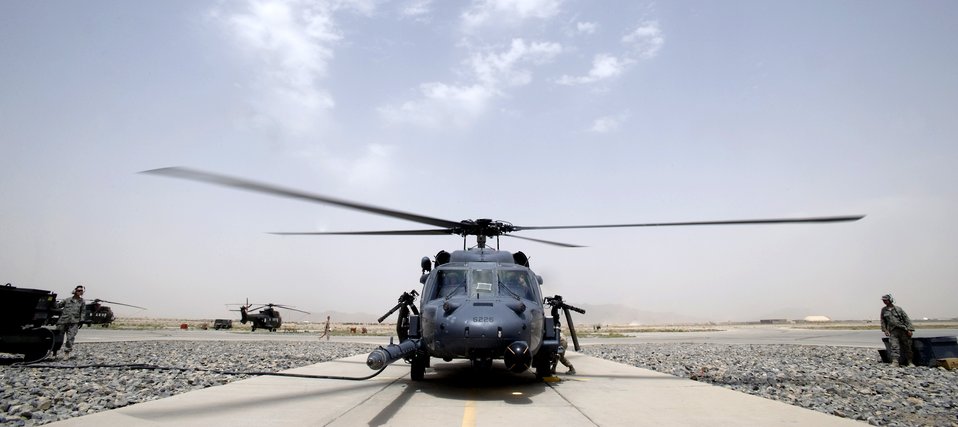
Airmen enhance Army medical evacuation mission

An HH-60 Pave Hawk lands after a flight to test mission readiness after preventative maintenance Aug. 15 at Kandahar Air Base, Afghanistan. The HH-60 as well as crews who fly it and maintain it are assigned to the 305th Expeditionary Rescue Squadron, an Air Force Reserve unit deployed from Davis-Monthan Air Force Base, Ariz.